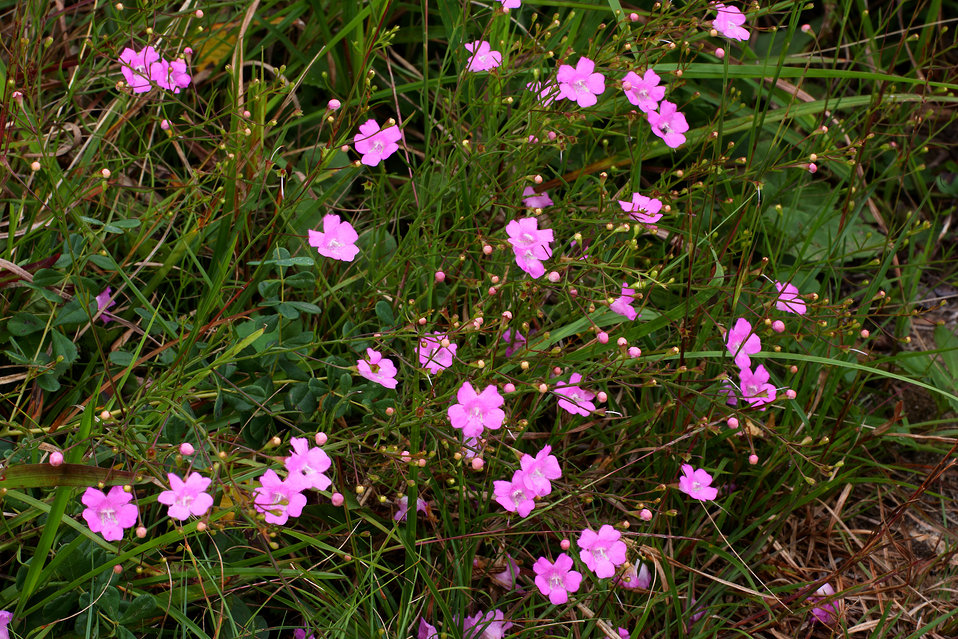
Sandplain Gerardina

Photographed at Wertheim National Wildlife Refuge.